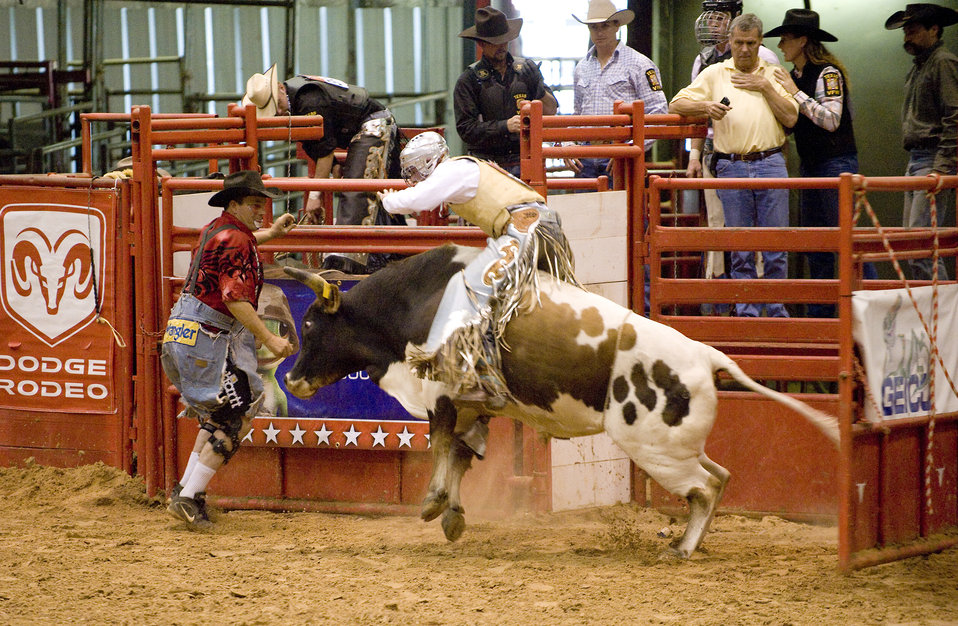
Airmen rope competition at rodeo world finals

Staff Sgt. R.J. Eppers leaves the chute during the bull riding competition at the Professional Armed Forces Rodeo Associations World Finals Nov. 20, 2010, in Glen Rose, Texas. PAFRA is a professional rodeo organization founded and comprised of military members, retirees, dependents, veterans and civilian Department of Defense card holders. Sergeant Eppers is assigned to Ellsworth Air Force Base, S.D.